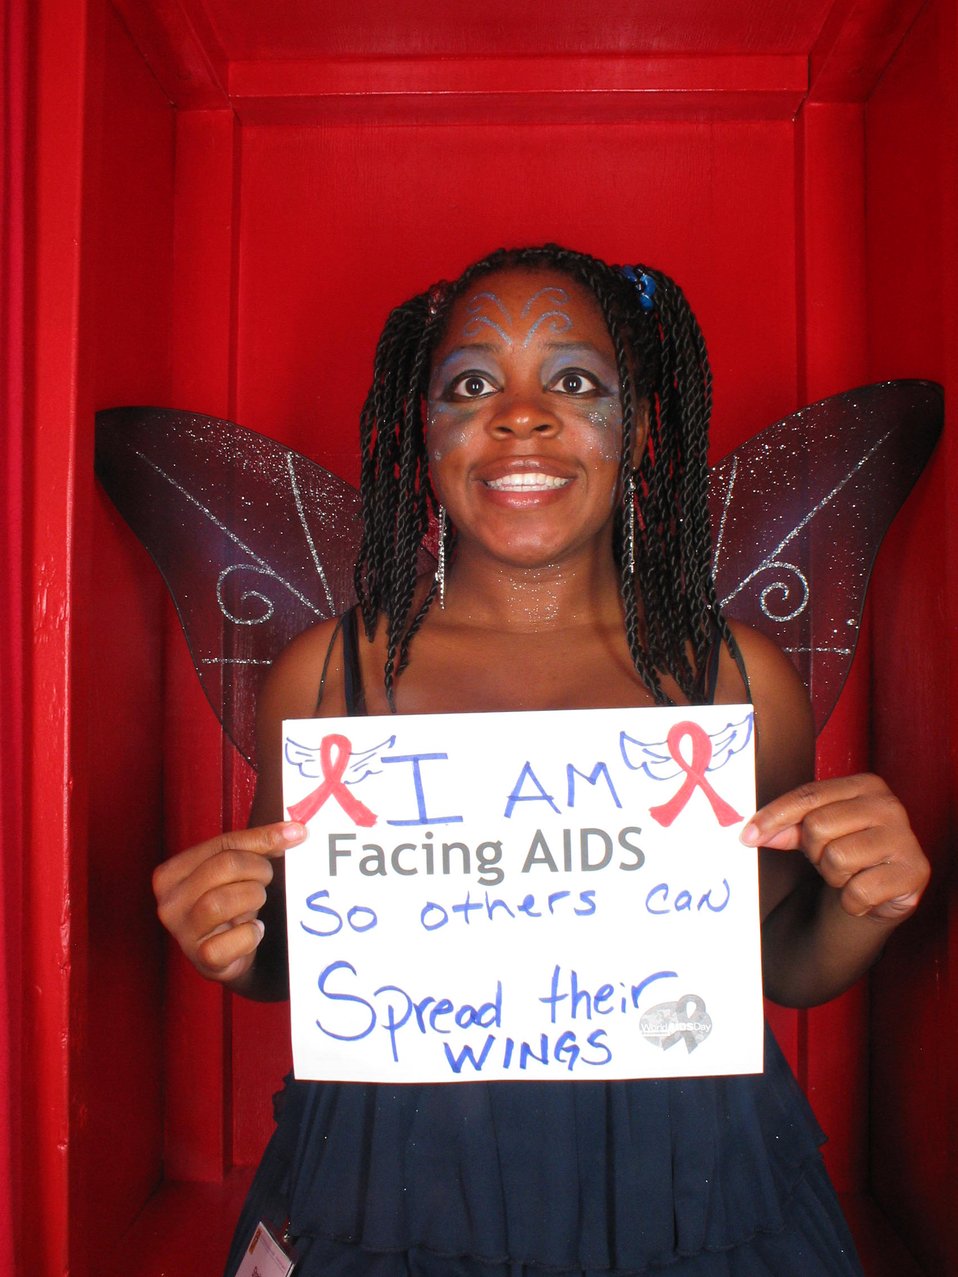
I am Facing AIDS so others can spread their wings.